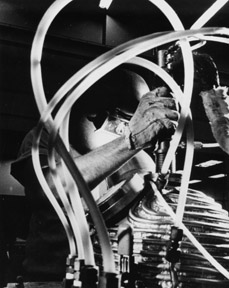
Special metal alloys required in the construction of safe and reliable nuclear reactors are developed and tested at USAEC laboratories. c. 1971